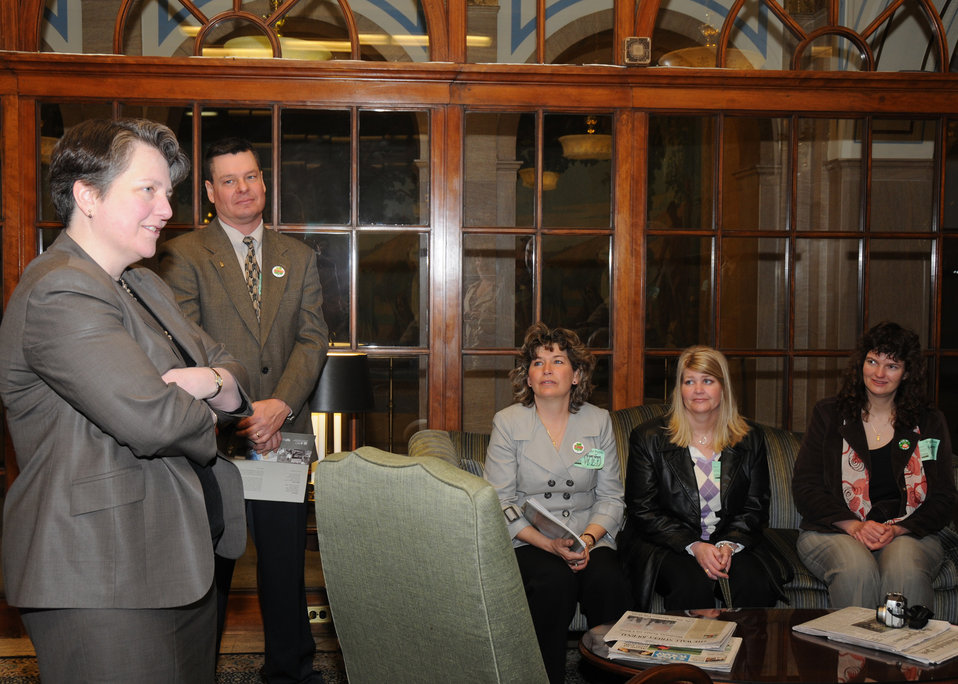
Agriculture Deputy Secretary Kathleen Merrigan greets the recipients of the Outstanding Young Farmer Award at the Department of Agriculture on Wednesday, March 17, 2010. The Outstanding Young Farmer program has been administered by The U.S. Junior Chamber (Jaycees) since the 1950s. The Outstanding Young Farmer program was established to enhance interest in the farmer, foster better urban-rural relations by understanding of farmers' problems, develop an appreciation of farmers’ contributions and achievements, and inform the agribusiness community of the growing urban awareness of farmers' importance and impact on the American economy. USDA Photo 10di1270-03